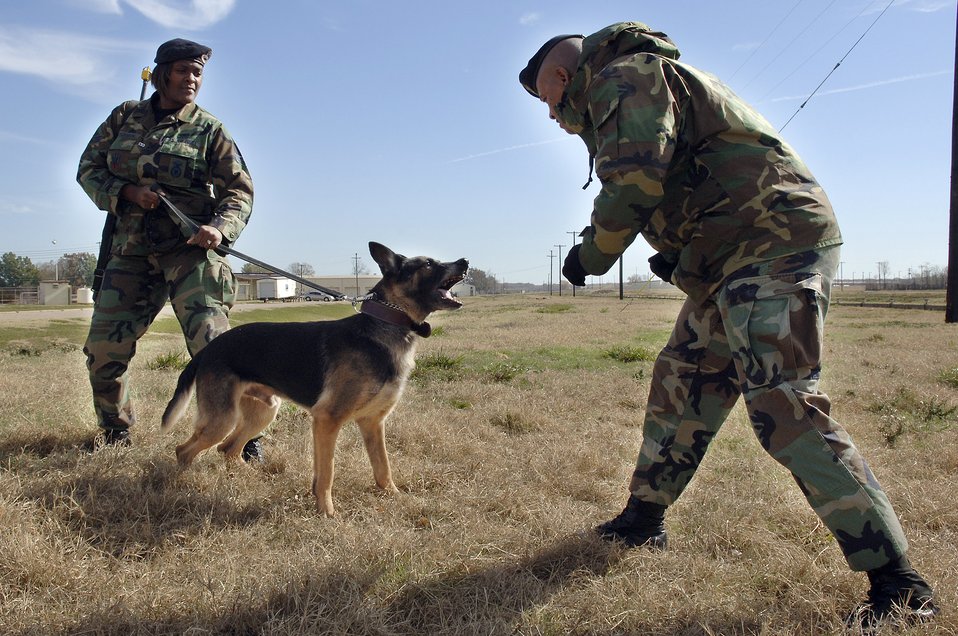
Expeditionary Combat Skills Training Course

BARKSDALE AIR FORCE BASE, La. (AFPN) -- Senior Airman Tia Blackmon (left) and her military working dog, King, and Tech. Sgt. Marcellus Oliver prepare for the expeditionary combat skills training course here. The weekly course, which ends this month, prepares Airmen for deployment. Military working dogs are now part of the course to help provide a more realistic training experience. Airman Blackmon, Sergeant Oliver and King are with the 2nd Security Forces Squadron.